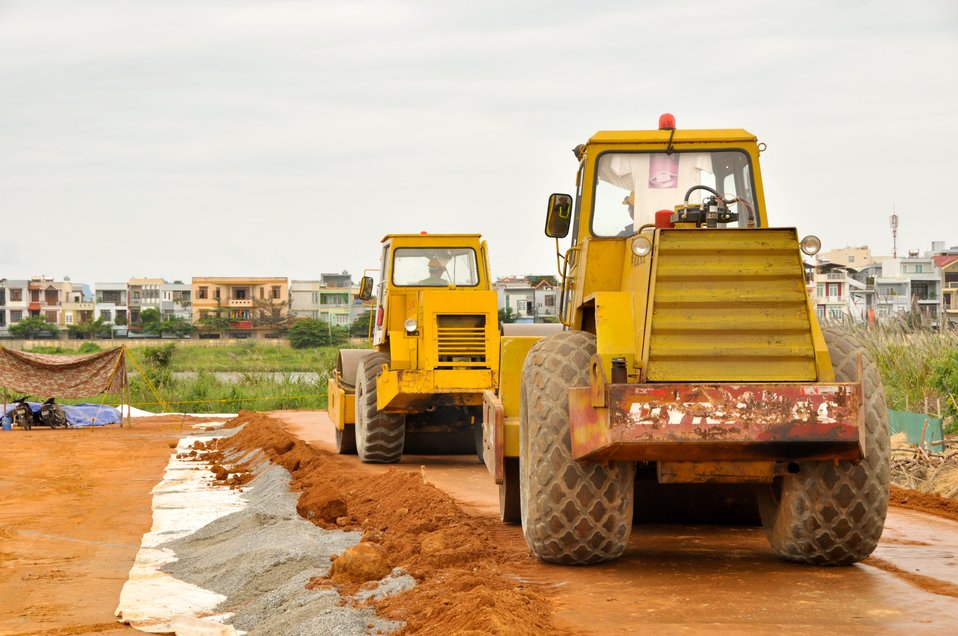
Site Preparation for Environmental Remediation of Dioxin Contamination at Danang Airport

Danang Airport, January 22, 2013